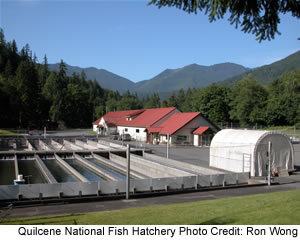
Quilcene National Fish Hatchery

Hatchery buildings and raceways are seen here at the Quilcene National Fish Hatchery on the west side of the Olympic Peninsula in Washington State.